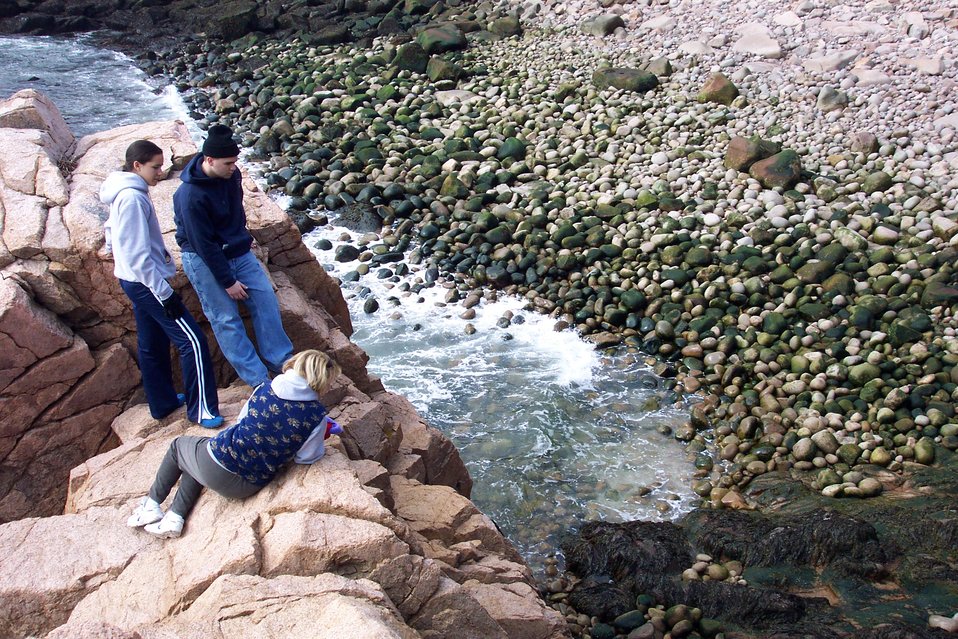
Looking down on a 'big'sand beach on the way to Otter Cliffs area. Photo #1 of sequence.